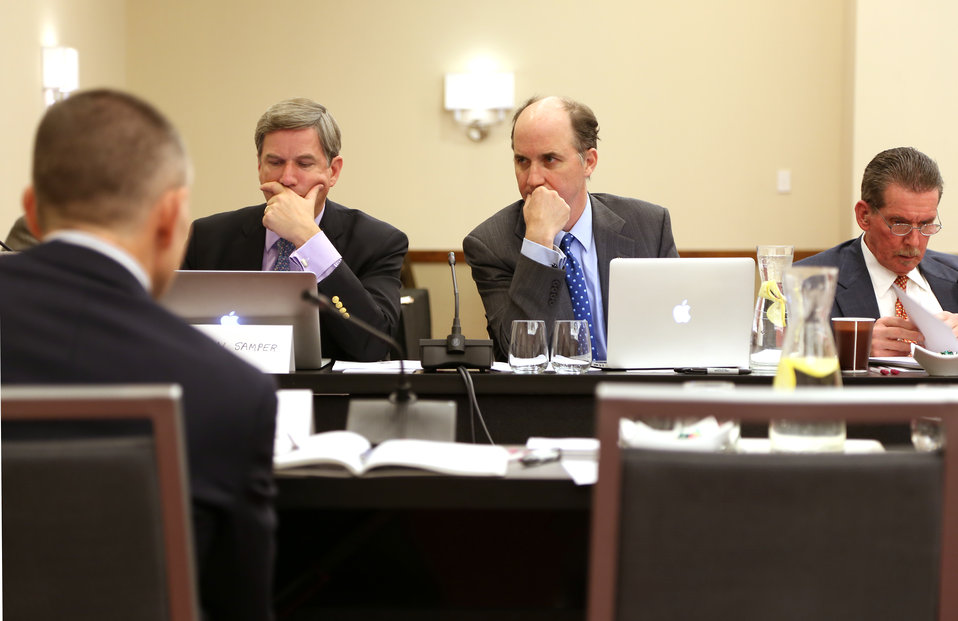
Wildlife Trafficking Advisory Council Meeting March 20, 2014